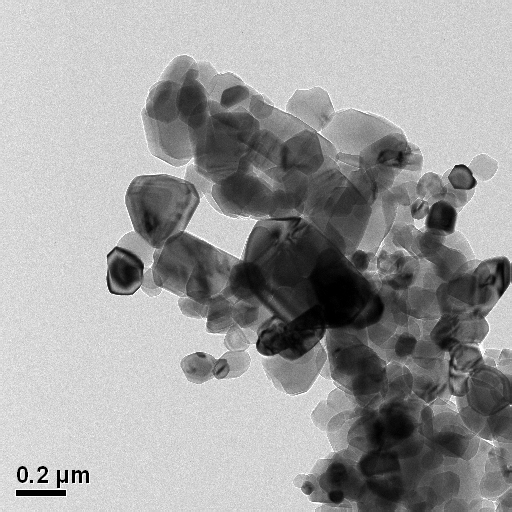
Beryllium Reference Material

The new Standard Reference Material, Beryllium Oxide Powder (SRM 1877), shown in this scanning electron micrograph mimics the form of beryllium to which workers would be exposed much more closely and should facilitate much more representative and informative toxicological studies, more accurate monitoring and more effective clean up of contaminated areas.